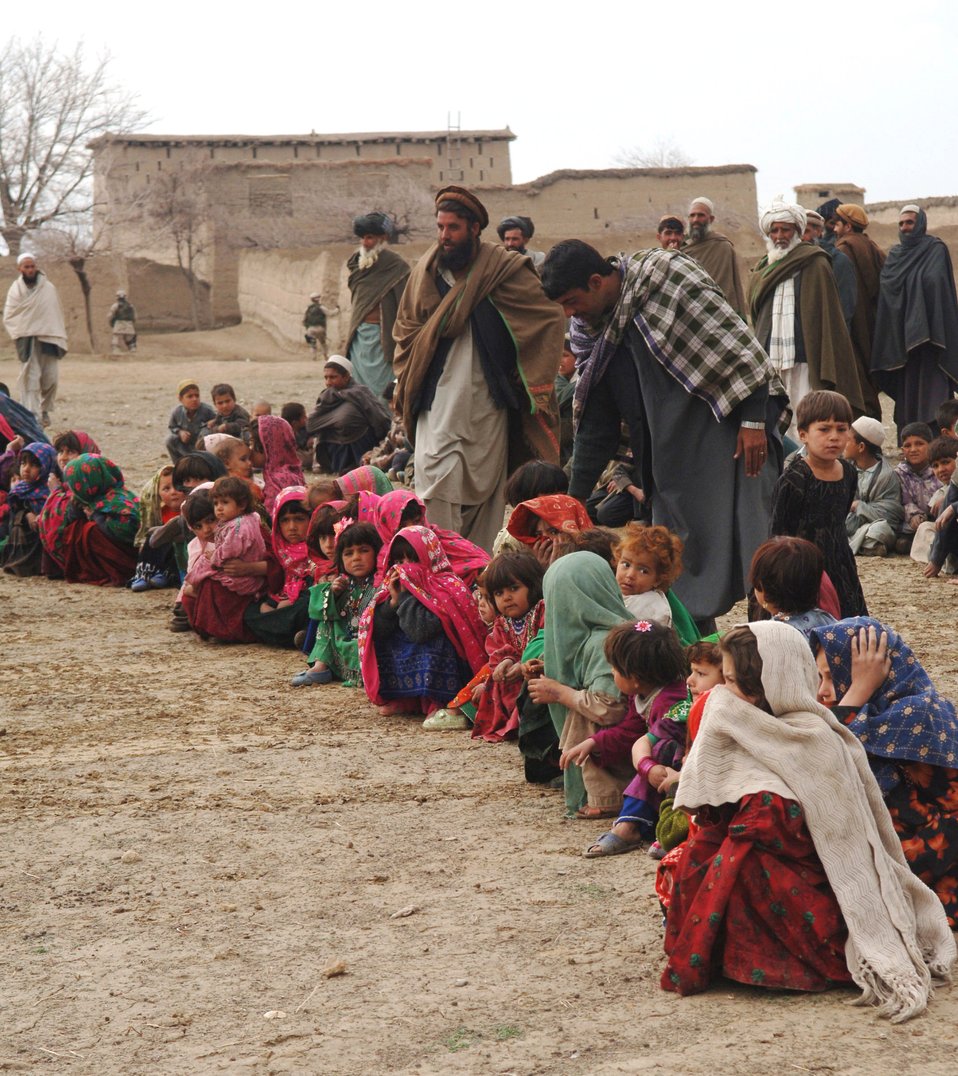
Airmen reach out

Residents of the village of Gadia, Afghanistan, line up to receive bags of clothes from Airmen with the 455th Air Expeditionary Wing at Bagram Air Base, Afghanistan.